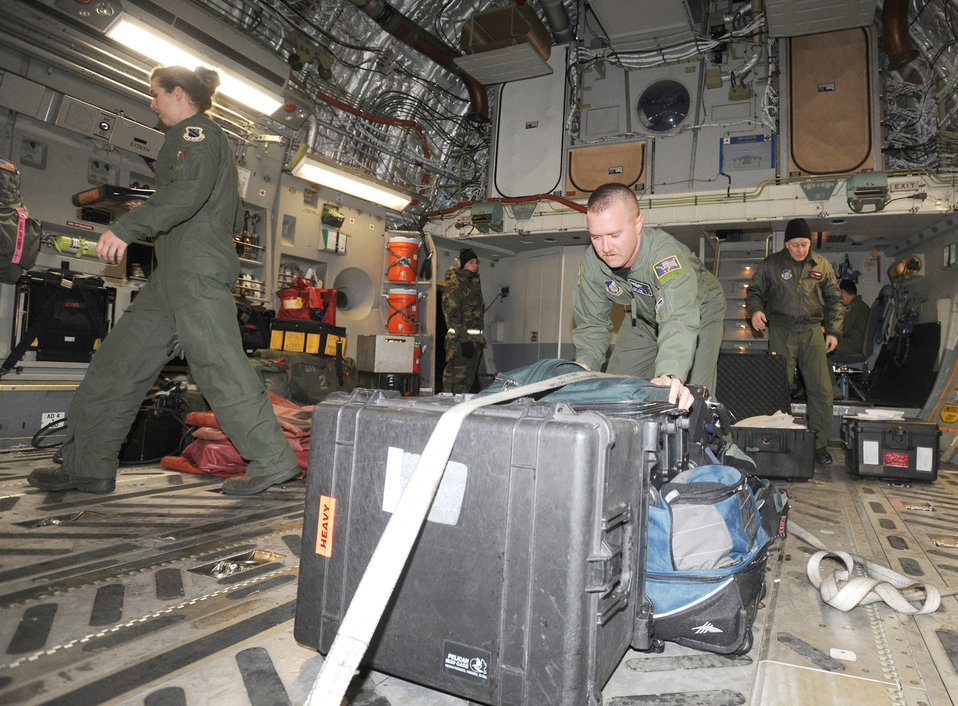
PACAF aircraft depart to assist Haiti relief effort

Aircrew members from the 517th Airlift Squadron and 249th Airlift Squadron scramble to deploy to Haiti Jan. 19, 2010, hours after being notified at Elmendorf Air Force Base, Alaska. The crewmembers will assist humanitarian efforts for the earthquake victims in Haiti.